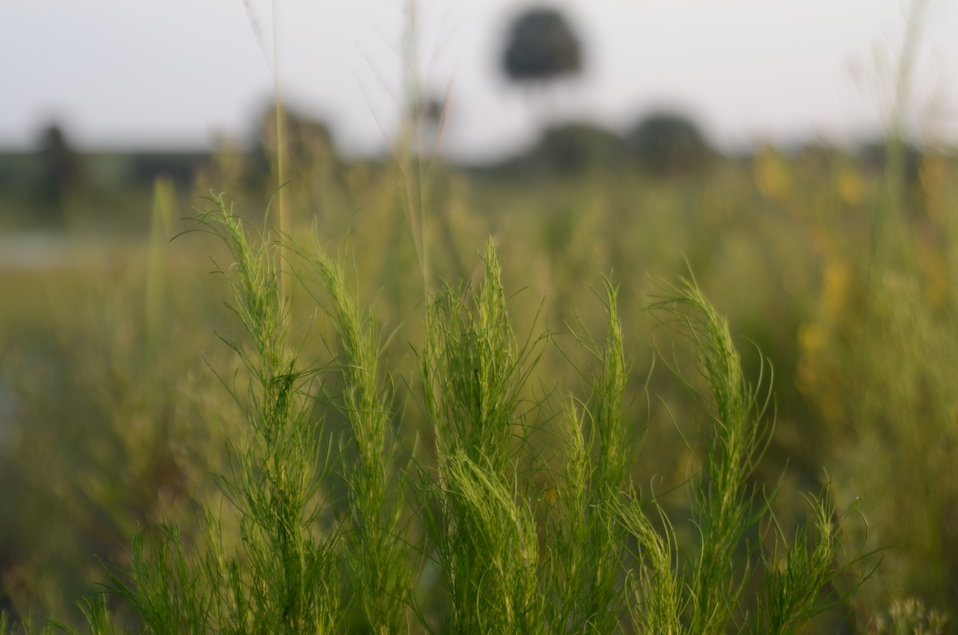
Agriculture Secretary Tom Vilsack today announced $100 million in financial assistance to acquire permanent easements from eligible landowners in four counties and assist with wetland restoration on nearly 24,000 acres of agricultural land in the Northern Everglades Watershed, FL, on Thursday, August 8, 2011.